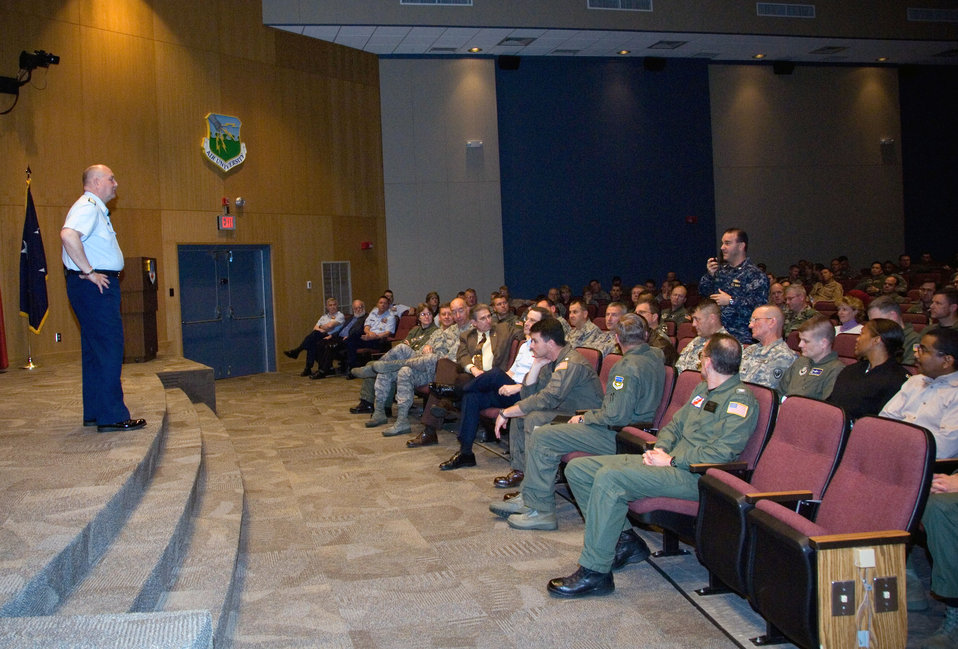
Top officer cites Coast Guard-Air Force ties

Adm. Thad Allen, U.S. Coast Guard commandant, addresses Air War College students April 9 about homeland security. The admiral's address was part of the Distinguished Lecture Series that Air War College provides its students in order to educate them on leadership. Under the program, leaders from across a wide range of disciplines, including diplomats and scholars, speak on a regular basis to Air War College students.